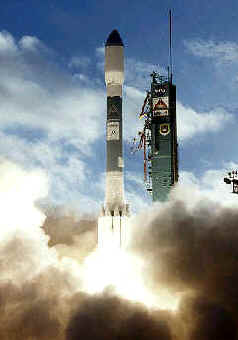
Delta II